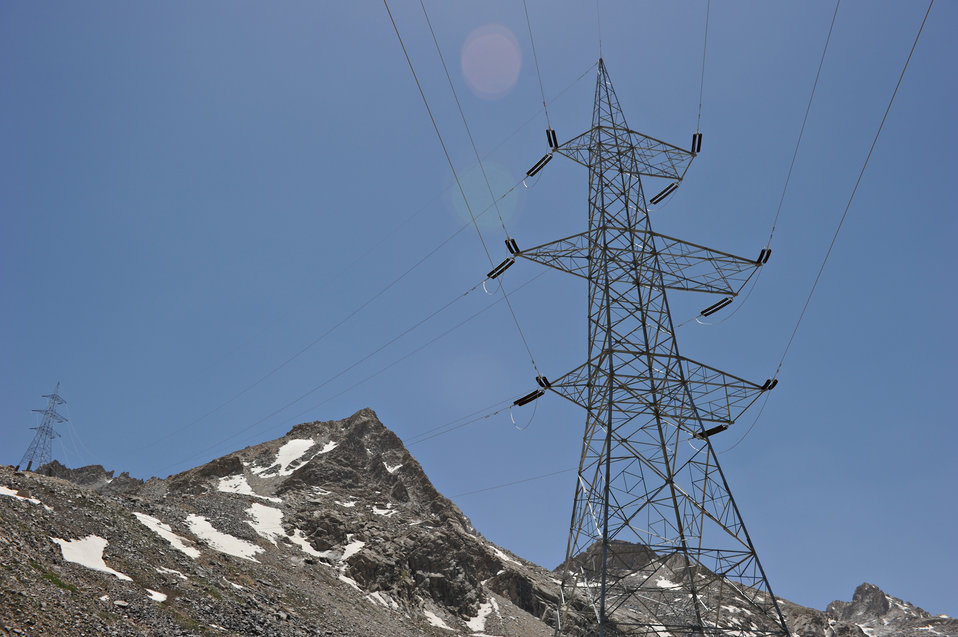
Power lines near the North end to the Salang Tunnel on the border of Parwan and Baghlan Provinces, Afghanistan, on Wednesday, June 15, 2011. (S.K.Vemmer/Department of State)